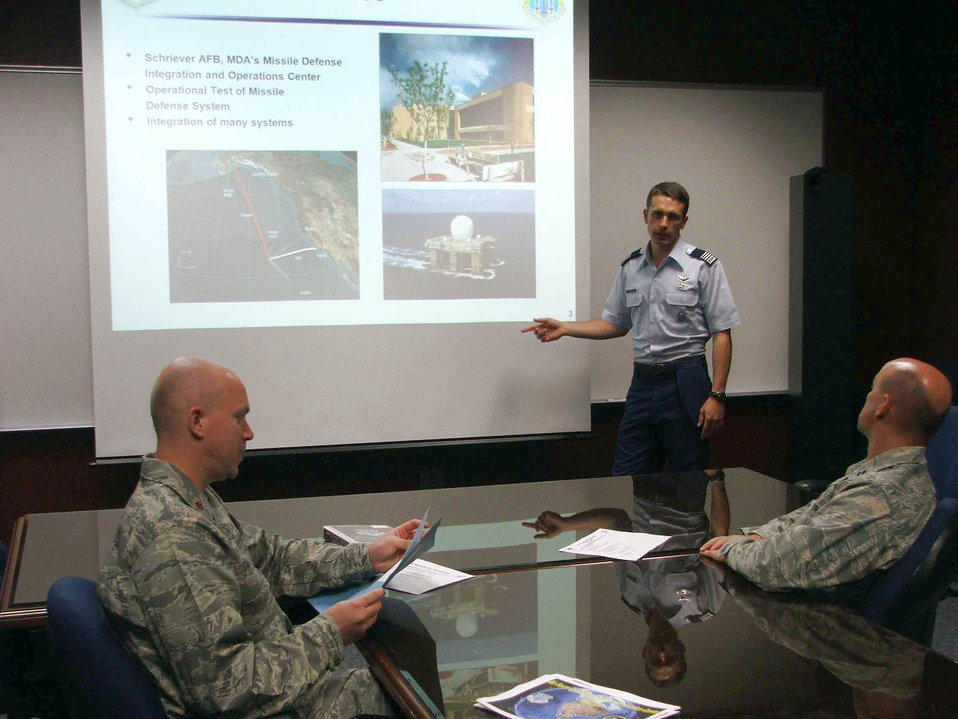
Summer research program

Air Force Academy Cadet First Class Bryan Freeman briefs Maj. Dan Cammack (left) and Capt. Tom Wegner on a recent ballistic missile defense flight test. Cadet Freeman worked at the Air Force Operational Test and Evaluation Center's Detachment 4 at Peterson Air Force Base, Colo., for five weeks. He was participating in the AFOTEC Mentoring Program that integrates Academy cadets with operational test teams to work on real-world Air Force projects.